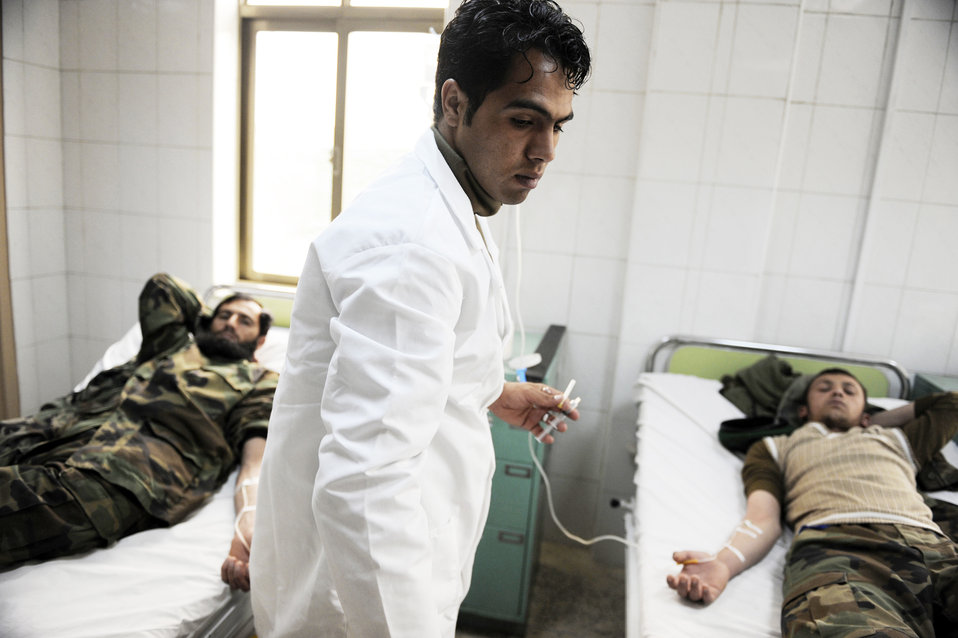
U.S. Air Force medics train fledgling Afghan medical corps

Afghan National Army Air Corps Sgt. Zabih Wafa cares for a dehydrated Afghan soldier Feb. 23, 2010, at Kabul International Airport, Afghanistan. Sergeant Wafa is a Command Air Corps Medical Service Clinic flight medic.